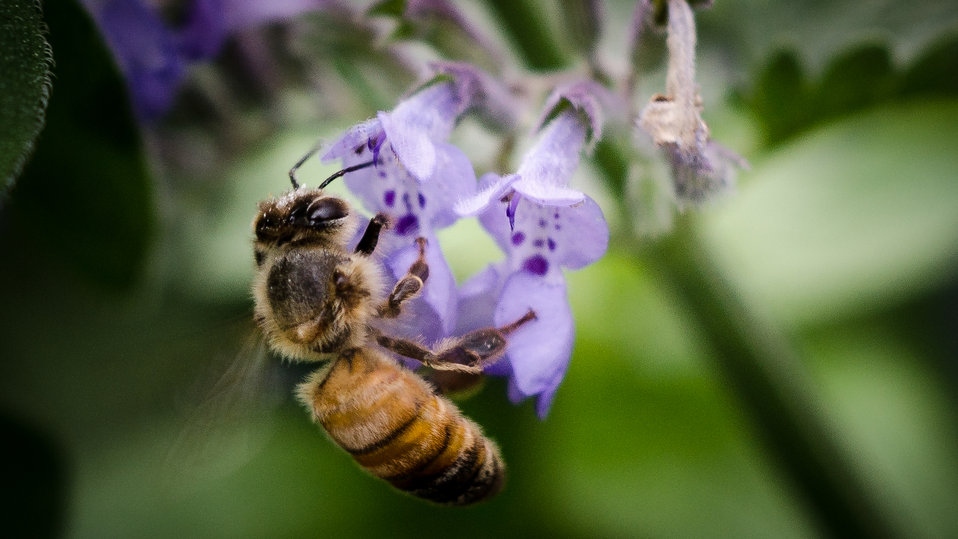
A honey bee is attracted to flowers in the U.S. Department of Agriculture People's Garden, outside the headquarters' Whitten Building in Washington, D.C., on Tuesday, May 21, 2013.This flower attracts bees because it provides nectar for the hive to feed on. Other plant in the garden have pollen that other bees will feed on. The bees gather pollen from many flowers and aide in pollination by moving from plant to plant.